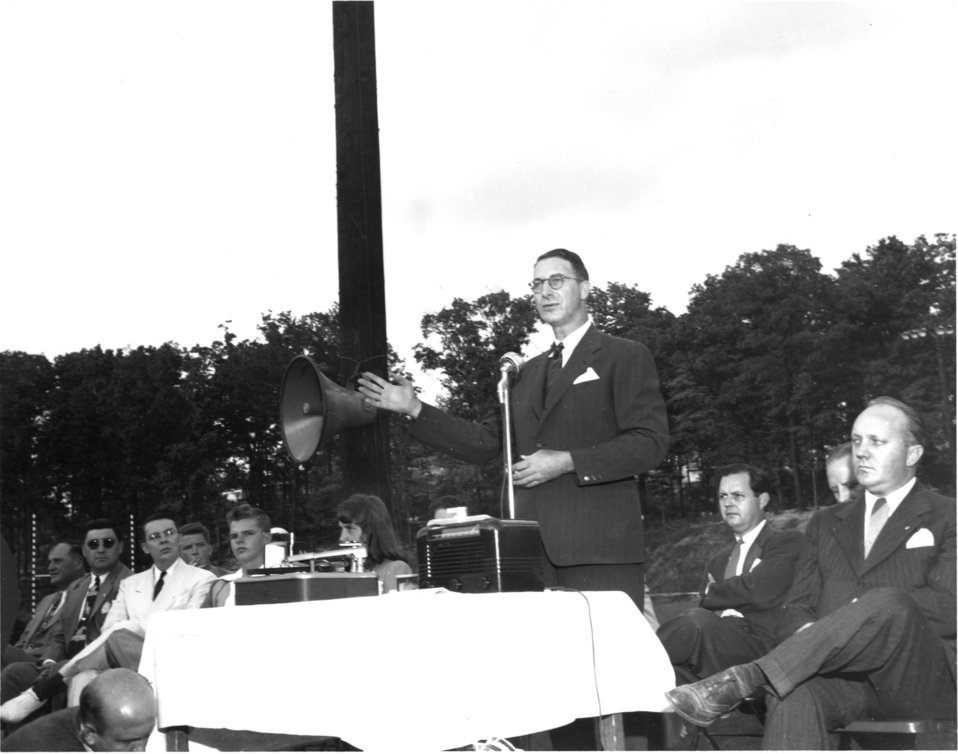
Notable persons at Oak Ridge